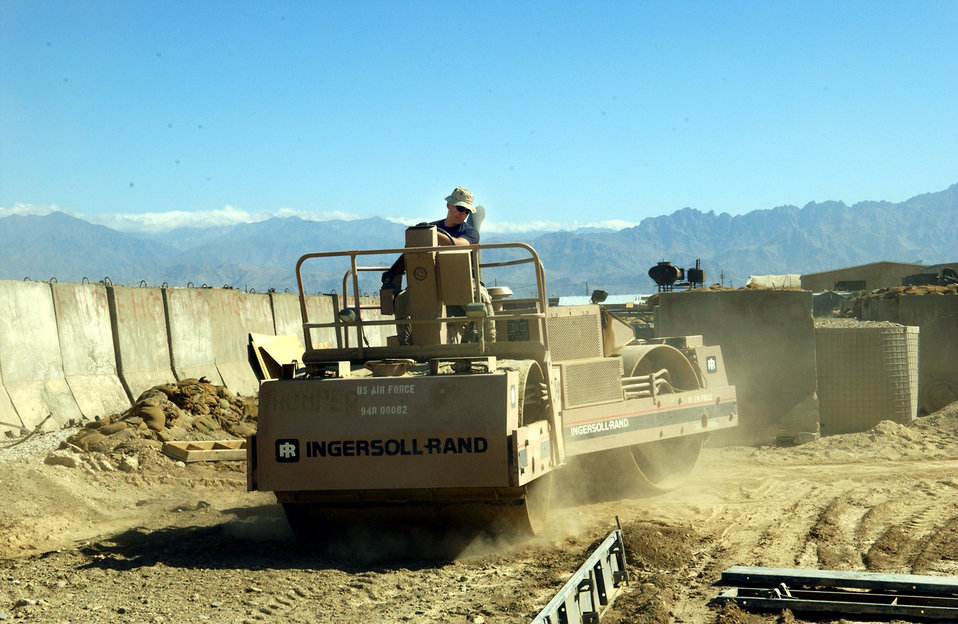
Packing it down

BAGRAM AIR BASE, Afghanistan -- Staff Sgt. James Crosley uses a roller to pack down dirt before civil engineers pour a concrete foundation pad here. Sergeant Crosley is assigned to the 455th Expeditionary Support squadron and deployed from Kadena Air Base, Japan.